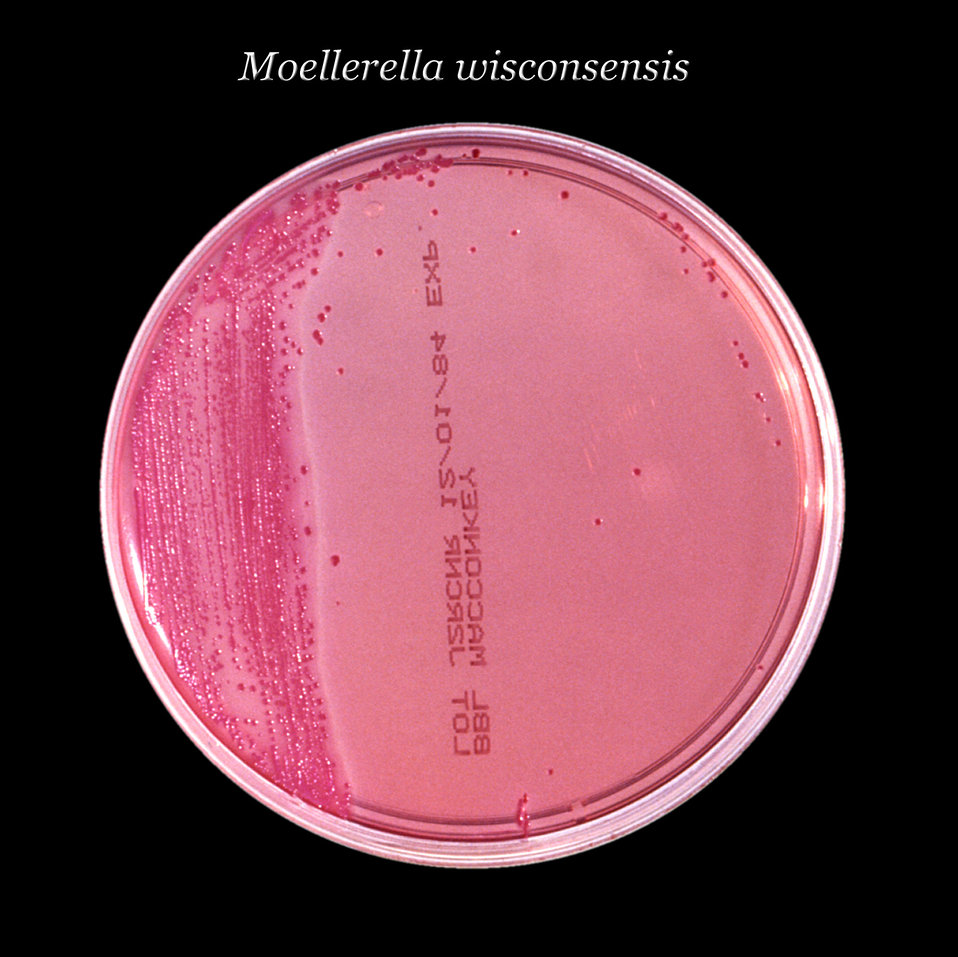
After 24 hours, this inoculated MacConkey agar culture plate cultivated colonial growth of Gram-negative, rod-shaped and facultatively anaerobic Moellerella wisconsensis bacteria.